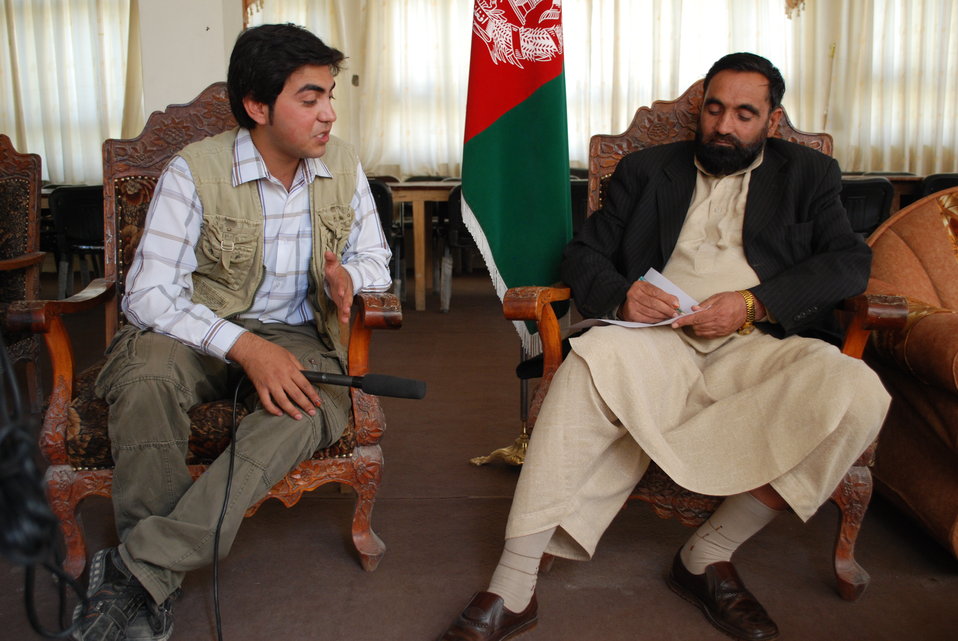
'On the Road' in Paktya Province